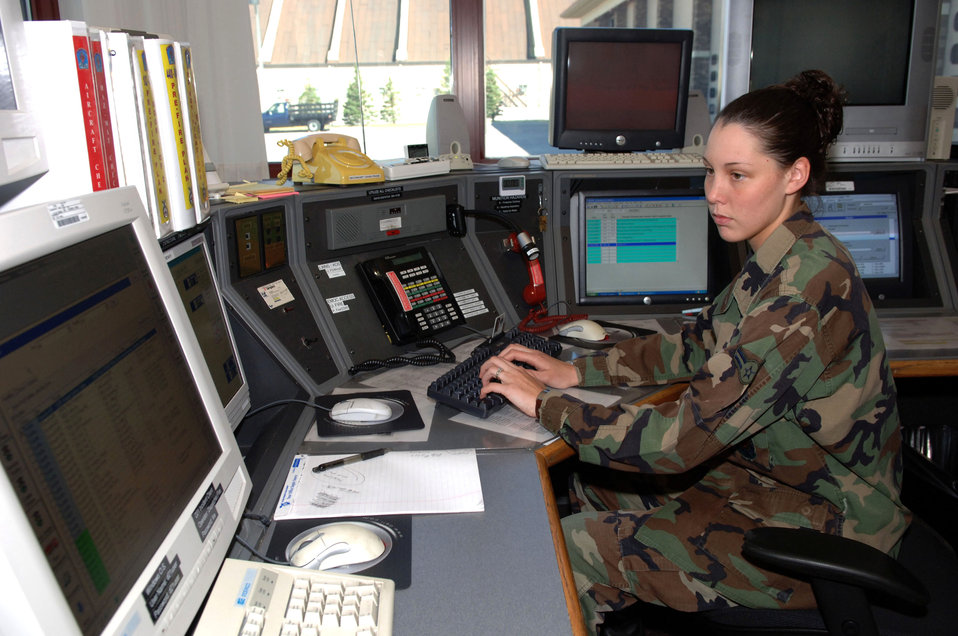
Dispatch

Airman 1st Class Jessica Taylor works at the fire dispatch alarm center at Ellsworth Air Force Base, S.D., on July 11. She is responsible for alerting Ellsworth's fire department of any reported safety mishaps. Airman Taylor is with the 28th Civil Engineer Squadron.